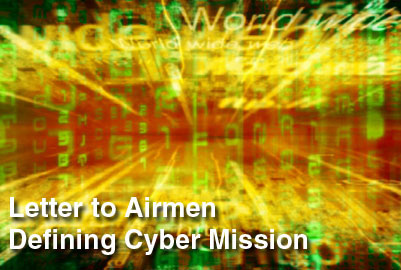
Leaders issue message, define cyber mission

In a joint Letter to Airmen, Secretary of the Air Force Michael Donley and Air Force Chief of Staff Gen. Norton Schwarz focus on defining the service's role in the cyberspace mission.